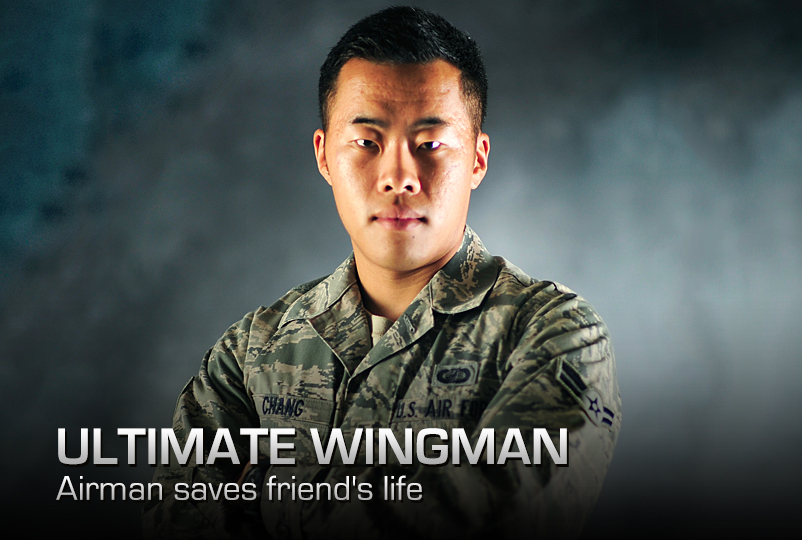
Ultimate Wingman